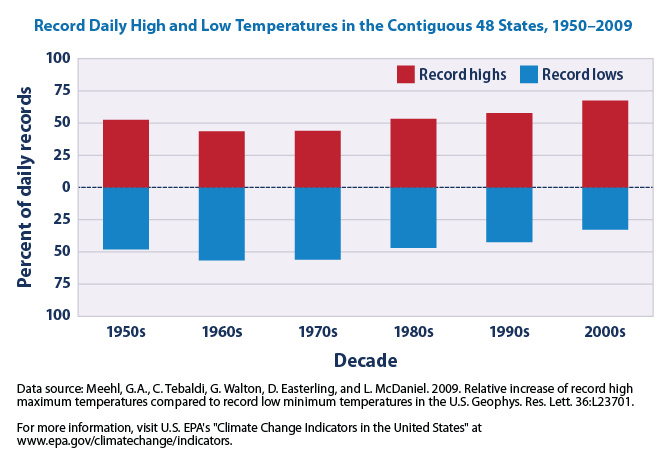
Climate Change Indicators - Daily Record High and Low Temperatures in U.S.

In the U.S., unusually hot summer temperatures have become more common, and record high temperatures now outnumber record low temperatures by two to one. Read our Climate Change Indicators Report to learn more: www.epa.gov/climatechange/indicators/weather-climate/high...